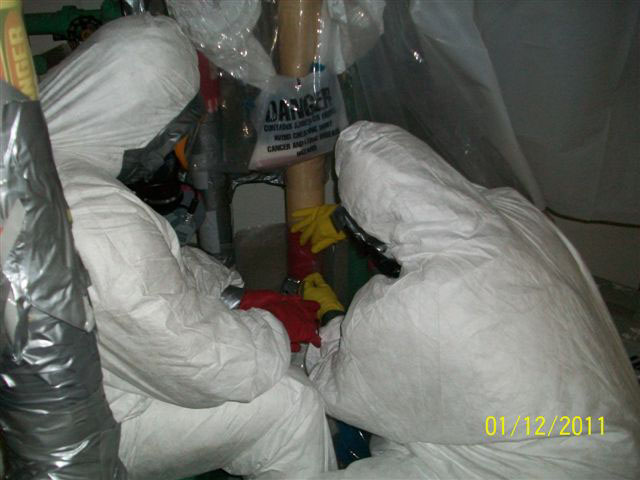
Workers Complete Asbestos Removal at West Valley to Prepare Facility for Demolition

Recovery Act workers remove material containing asbestos from the Main Plant Process Building at the West Valley Demonstration Project to prepare the facility for demolition.